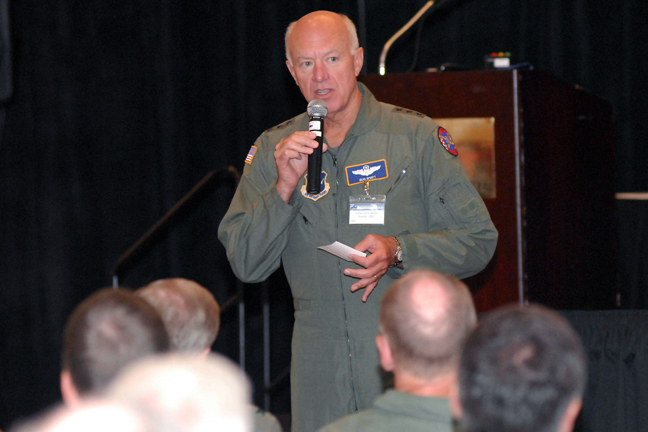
General stresses safety to Airmen

Lt. Gen. Harry M. Wyatt, III, director of the Air National Guard, speaks with guardsmen safety personnel at the Air Guard Executive Safety Summit held Aug. 4 in St. Louis.